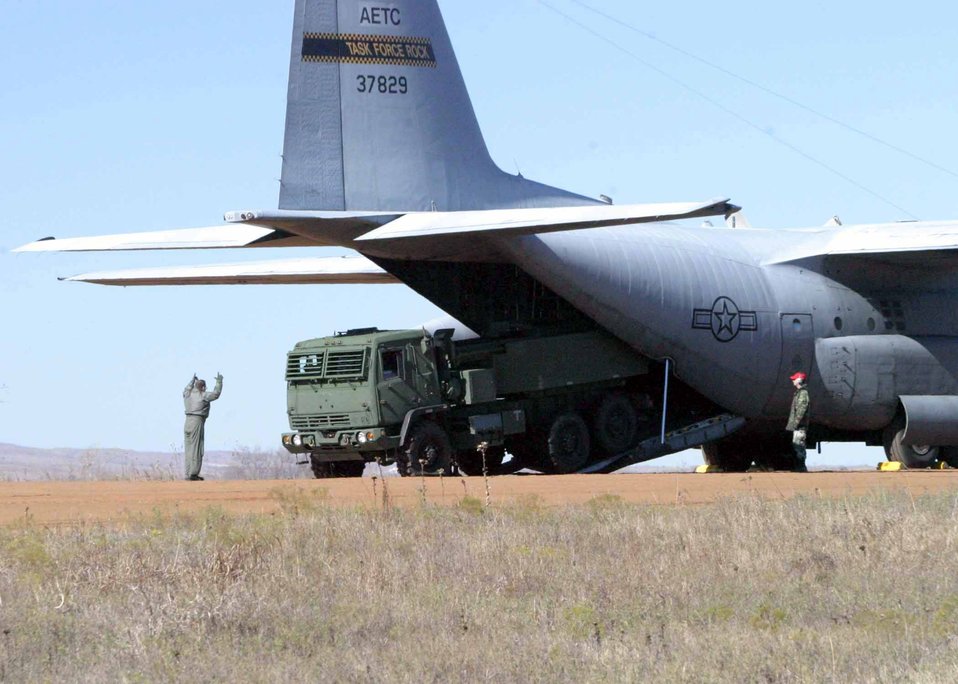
Fast fire

FORT SILL, Okla. -- A High Mobility Artillery Rocket System is downloaded from a C-130 Hercules on Nov. 19. For the first time, a HIMARS was flown combat loaded with live rockets more than 650 nautical miles from Redstone Arsenal in Huntsville, Ala., to an assault landing zone here. The exercise was a joint effort of soldiers, airmen and Marines. The rocket launcher was downloaded, and ready to fire in less than 20 minutes. It finished the mission by moving to a firing point nearby and firing a six-rocket volley of practice rounds.